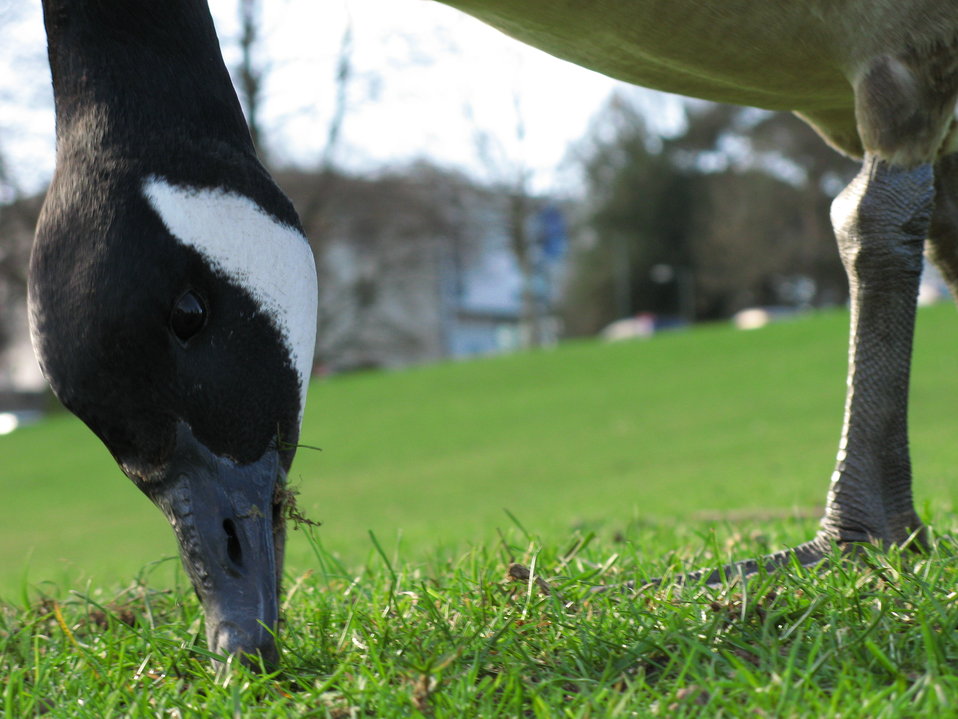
Canada goose, University of Nottingham, University Campus, UK